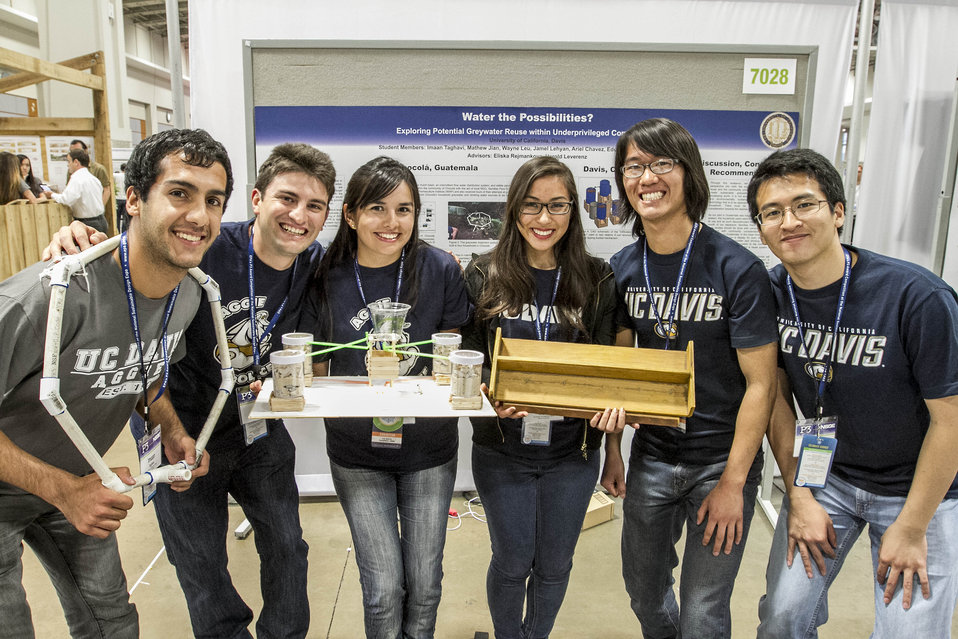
2014 P3 Competition

Students from the University of California Davis present their design for graywater reuse technology in Guatemala.
UC-Davis EPA P3 website.